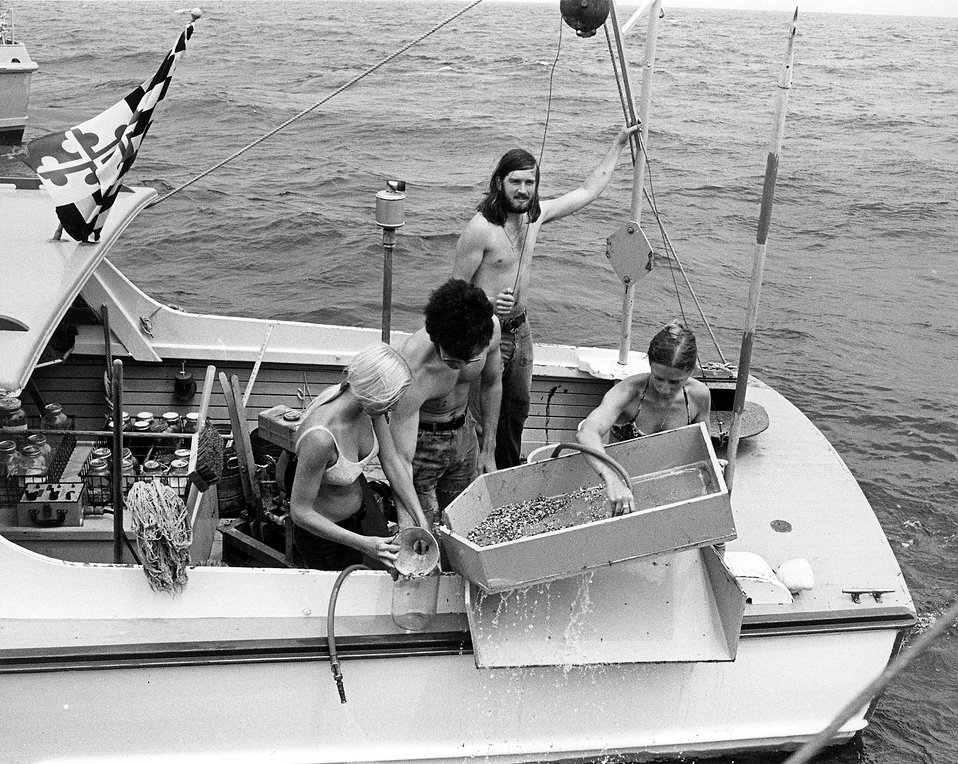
A research team from the University of Maryland examines material dredged up from the bottom of Chesapeake Bay in the vicinity of the Calvert Cliffs nuclear electric plant. Circa 1972.